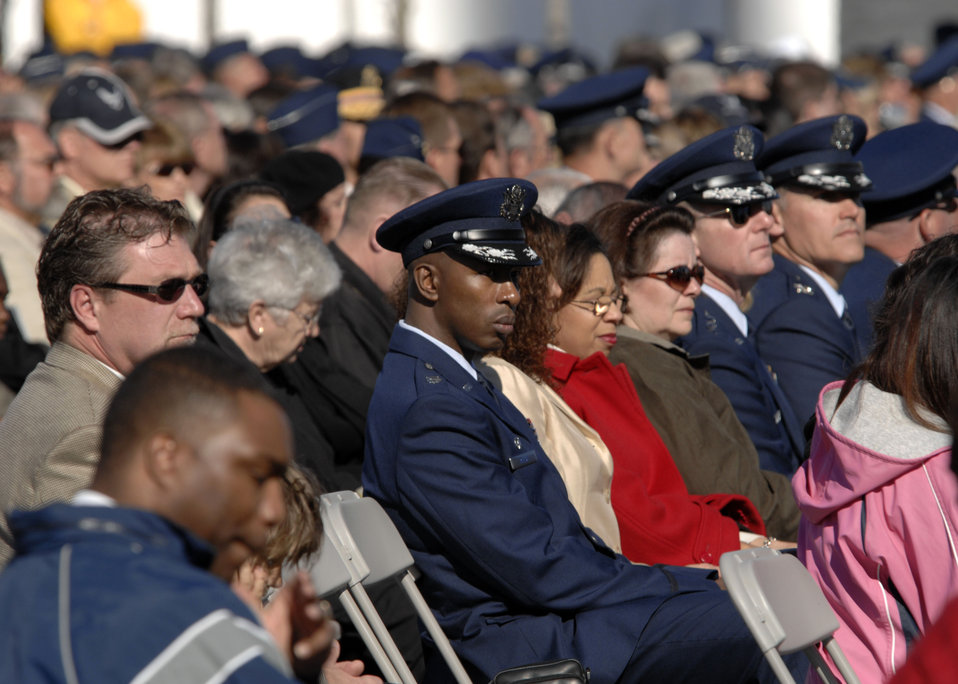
Wreath Ceremony

Hundreds gathered at the base of the new Air Force Memorial as Secretary of the Air Force Michael W. Wynne officially closed the Air Force Memorial commemoration with a wreath laying ceremony in Arlington, Va., Oct. 15, 2006. On behalf of all American citizens President George W. Bush accepted the Air Force Memorial from Air Force Memorial Foundation Chairman Ross Perot Jr. during the previous day's dedication ceremony at the base of the Air Force Memorial that overlooks the Pentagon. Designed by the late James Ingo Freed the memorial with its three soaring spires inspired by the U.S. Air Force Thunderbirds bomb burst manuever, pays tribute to and honors the patriotic men and women of the U.S. Air Force and its predeccessor organizations. An open house was held near the Pentagon in conjunction with the dedication ceremony which featured performances by the U.S. Air Force Band, the U.S. Air Force Honor Guard drill team, and culminated with a concert featuring country music performer LeeAnn Womack.